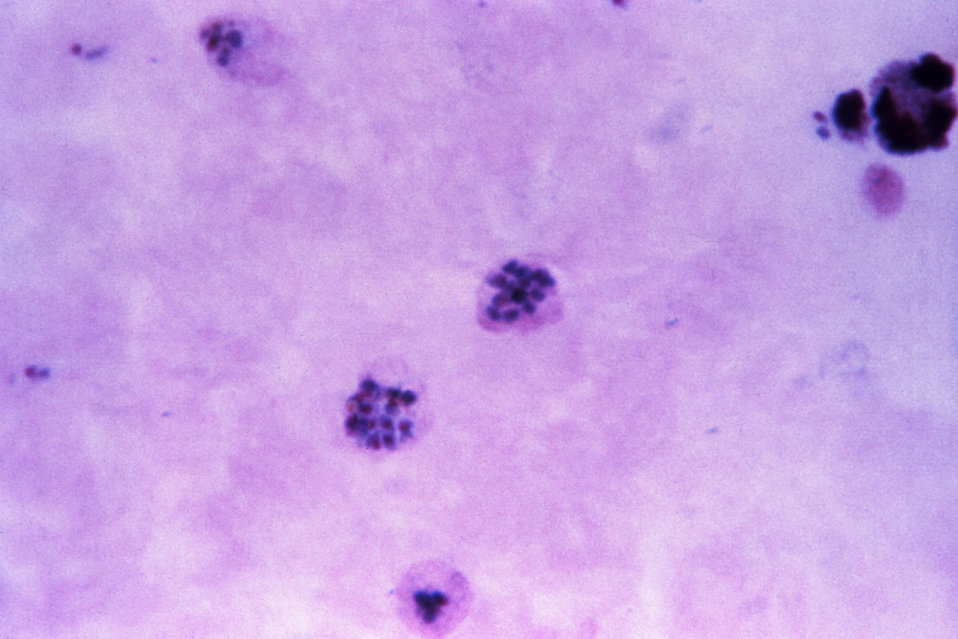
This thick film Giemsa stained micrograph shows growing, and ring-form P. vivax trophozoites and mature schizonts.